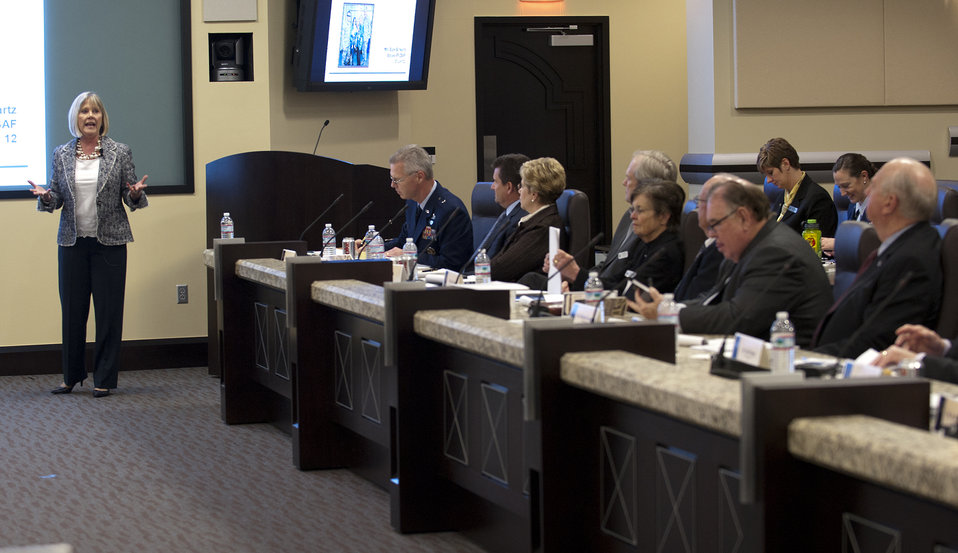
Civic leaders learn about wounded warrior, family issues

Suzie Schwartz, the wife of Air Force Chief of Staff Gen. Norton Schwartz,
speaks with prominent civic leaders during a conference Jan. 31, 2012, at
Joint Base Andrews, Md. She talked to the leaders, who represent communities
from across the U.S., about the ways local communities can help military
families.